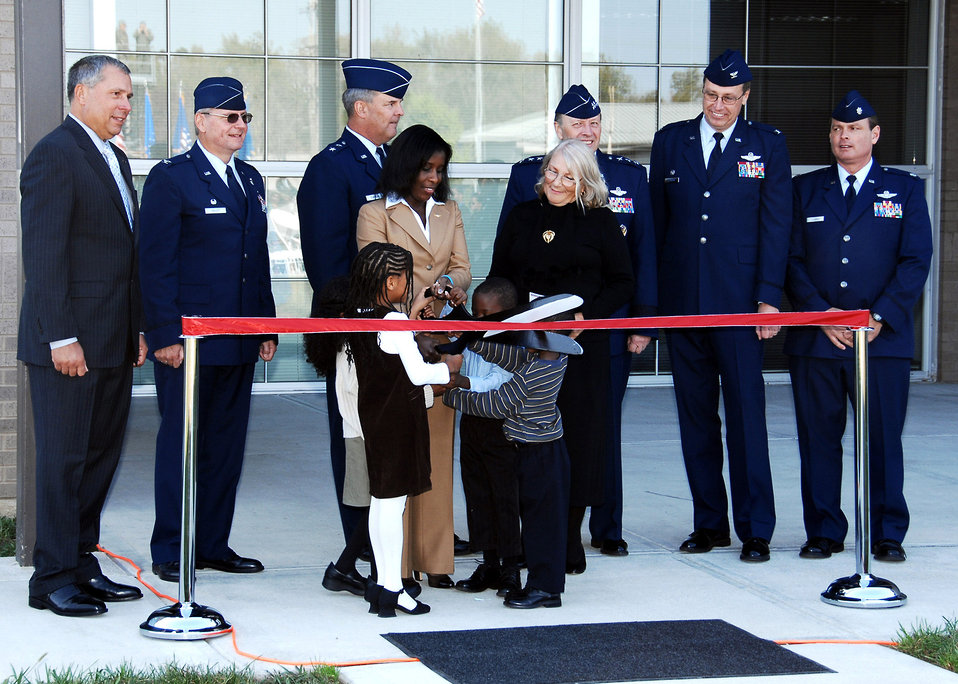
Building dedication honors Airman killed on 9/11

Melodie Homer cuts the ceremonial ribbon during the Operations Building Dedication Oct. 4 at Wright-Patterson Air Force Base, Ohio. The building was dedicated in honor of her late husband, Maj. LeRoy W. Homer Jr., who died Sept. 11, 2001. Overlooking the ribbon cutting are Col. (ret.) Robert Shondel; Col. Roger Gallet, the 445th Operations Group commander, Maj. Gen. Robert E. Duignan, the 4th Air Force commander; Ilse Homer, Major Homer's mother; Lt. Gen. Charles E. Stenner, the Air Force Reserve Command commander; Col. Stephen Goeman, the 445th Airlift Wing commander; Lt. Col. Chris Clark, the 445th Operation Group deputy commander; Laurel and Alden Homer, Major and Ms. Homer's children; and one other relative.